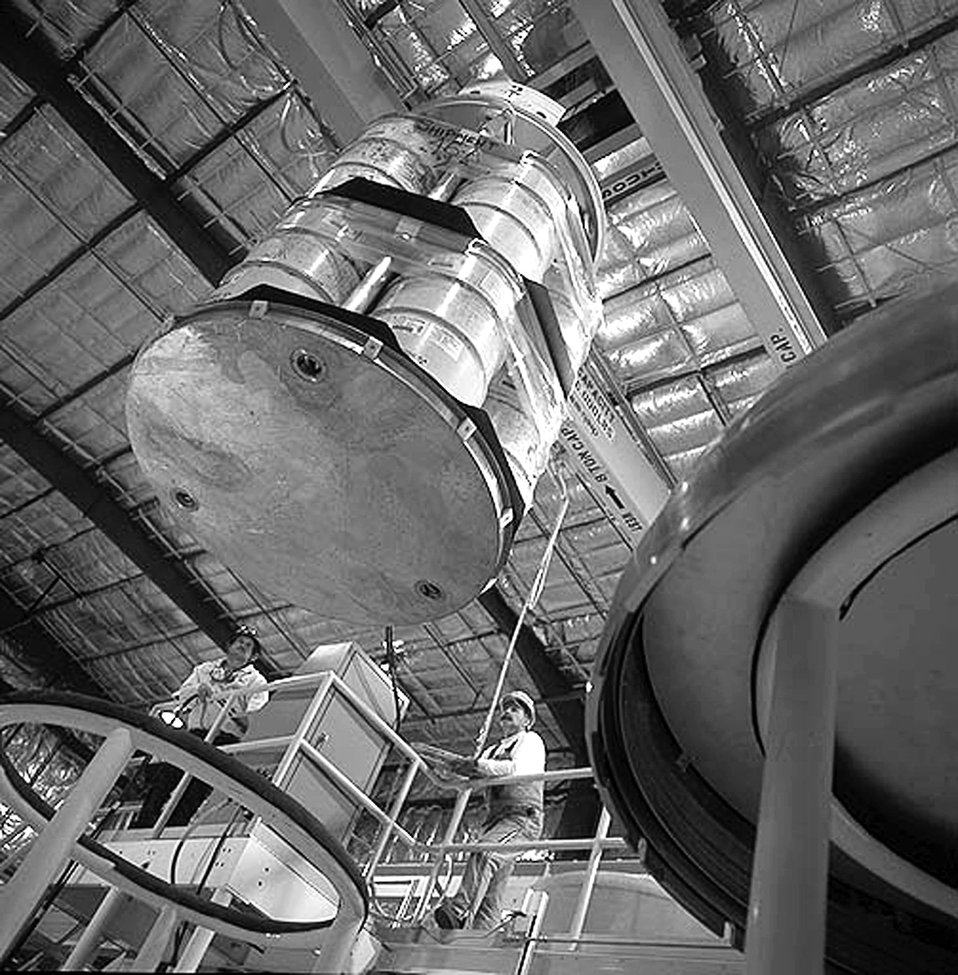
A GROUP OF FOURTEEN DRUMS OF TRANSURANIC WASTE AT INL BEING LOWERED INTO A TRUPACT-2 SHIPPING CASK.

THE DRUMS ARE BEING LOWERED INTO THE TRUPACT-2 SHIPPING CASK IN PREPARATION FOR SHIPMENT TO DOE'S WASTE ISOLATION PILOT PLANT IN NEW MEXICO. REMOVAL OF TRANSURANIC WASTE FROM INL WAS A COMMITMENT IN THE COURT ORDERED IDAHO SETTLEMENT AGREEMENT SIGNED BY DOE, THE STATE OF IDAHO, AND THE U.S. NAVY IN 1995. THE FIRST SHIPMENT OF TRANSURANIC WASTE TO WIPP LEFT INL ON APRIL 27, 1999 AND THE LAST, 563RD, ON OCTOBER 24, 2002.